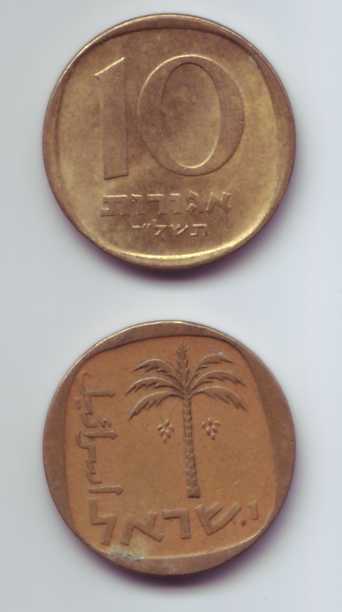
10 old Agorot coin from התשל'ז